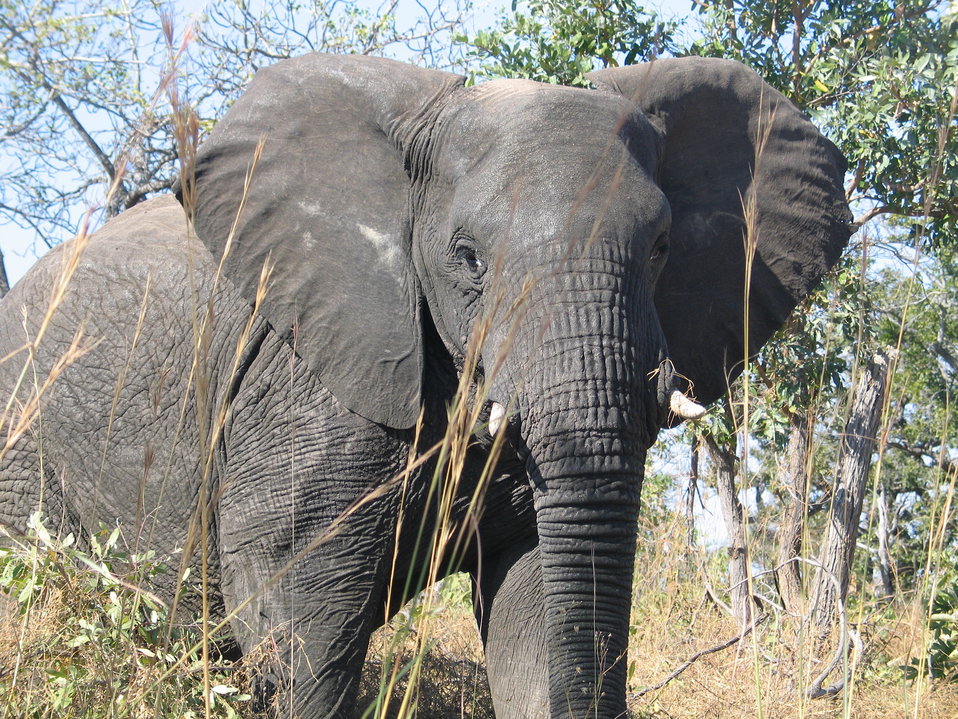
African elephant bull

Elephants are browsers and grazers, eating both grass and trees.